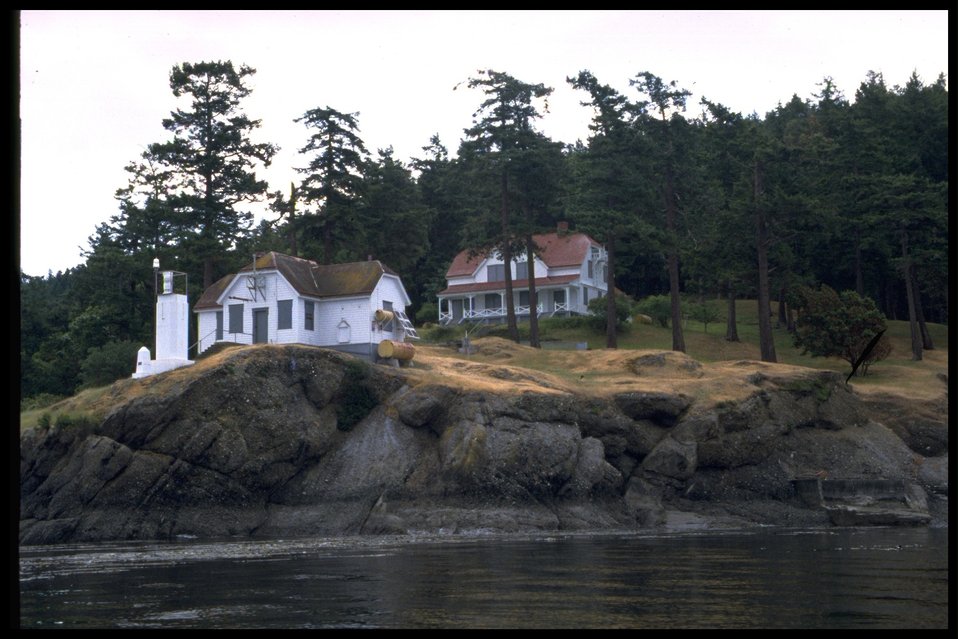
Turn Point from water with light station and buildings. Series of 17 photos.